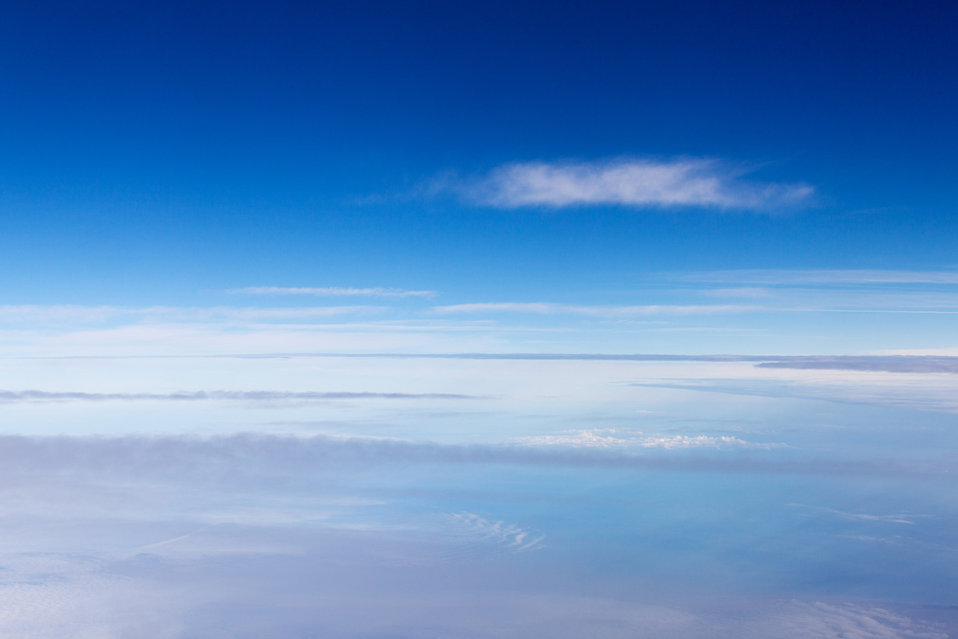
Clouds from a plane

View at the clouds from a plane.